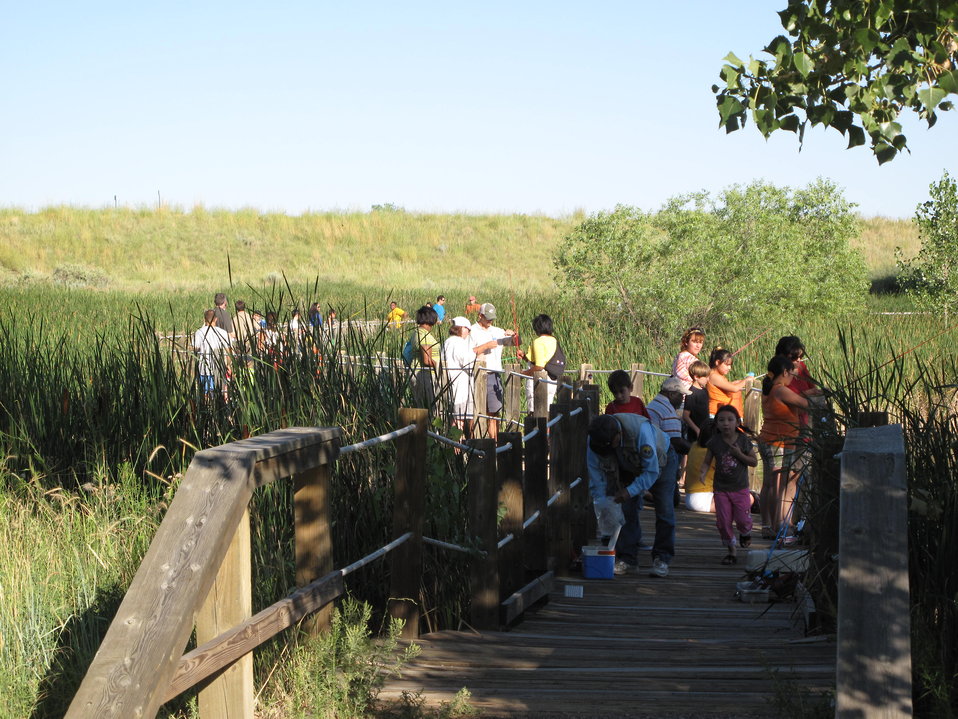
ELK fishing trip to RM Arsenal